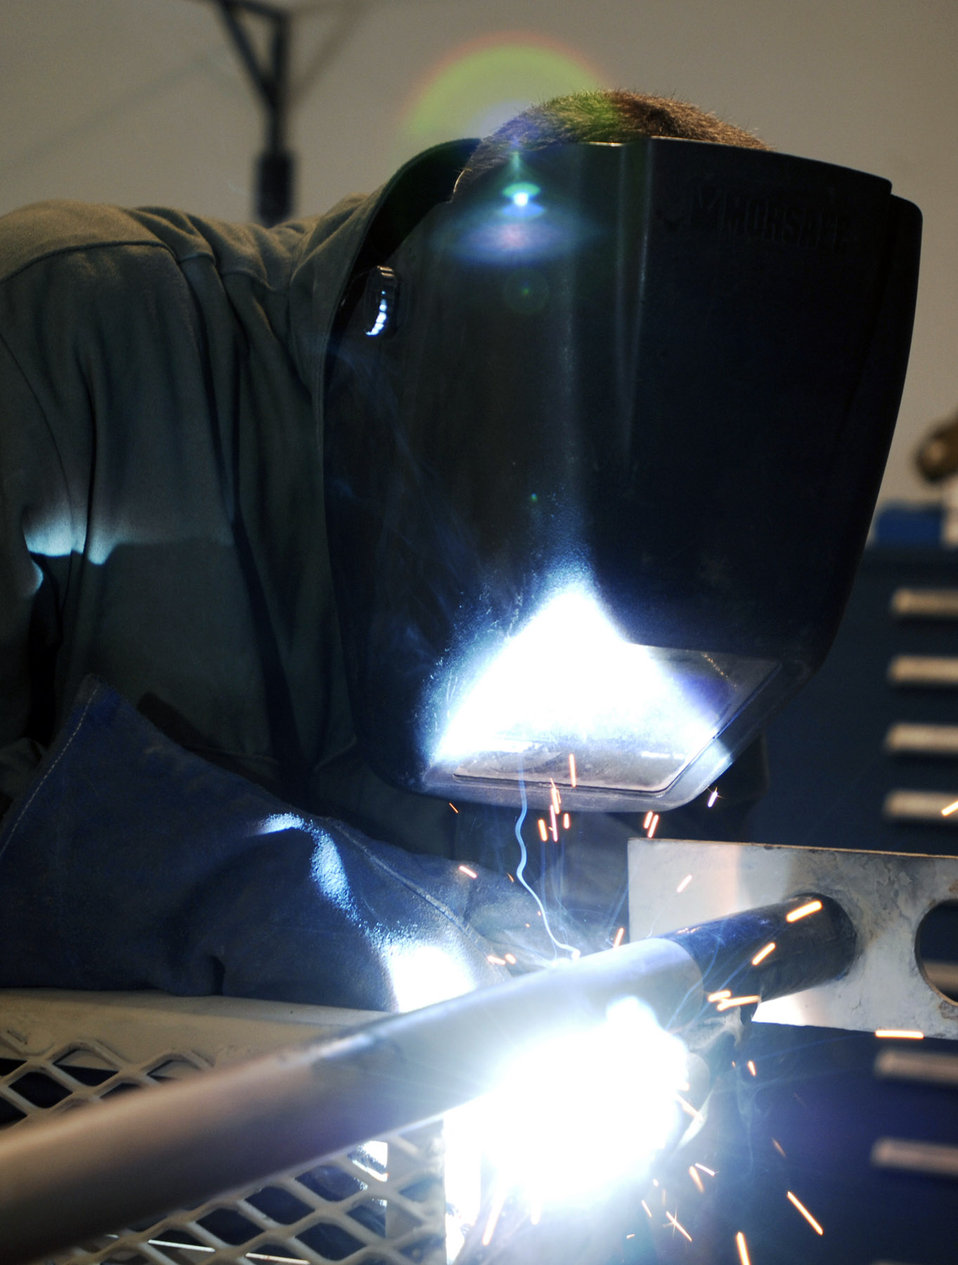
Showing his metal

Senior Airman Joseph Krafchak uses an arc welder to repair an aircraft maintenance stand Aug. 2 at Joint Base Balad, Iraq. Aircraft maintainers use the stands to perform maintenance on F-16 Fighting Falcons. Airman Krafshak, a metals technician journeyman with the 332nd Expeditionary Maintenance Squadron here, is deployed from Shaw Air Force Base, S.C. His hometown is Lompoc, Calif.